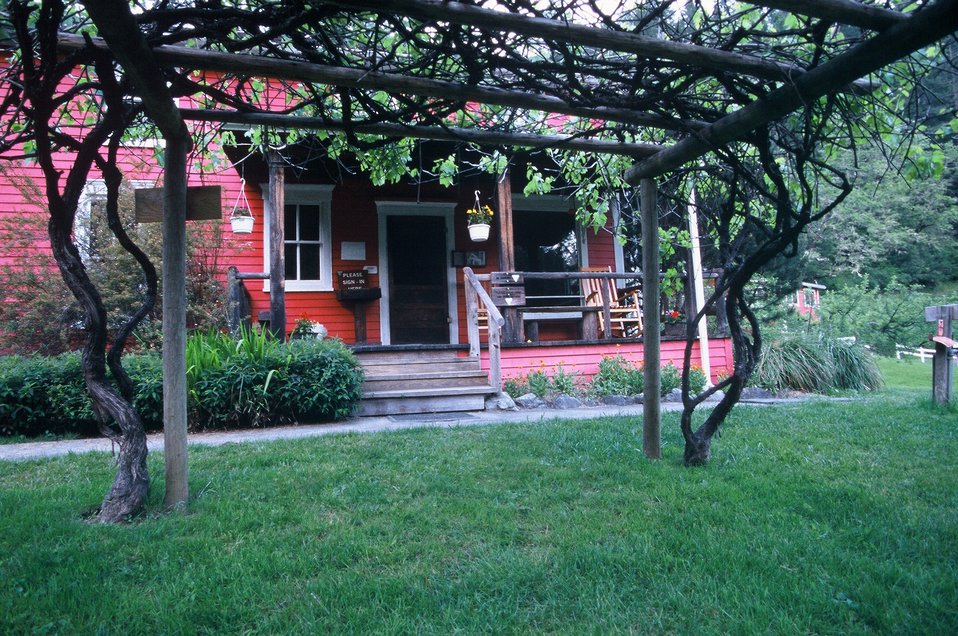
Wild section of the Rogue River from Grave Creek to Foster Bar May 19 to May 22.